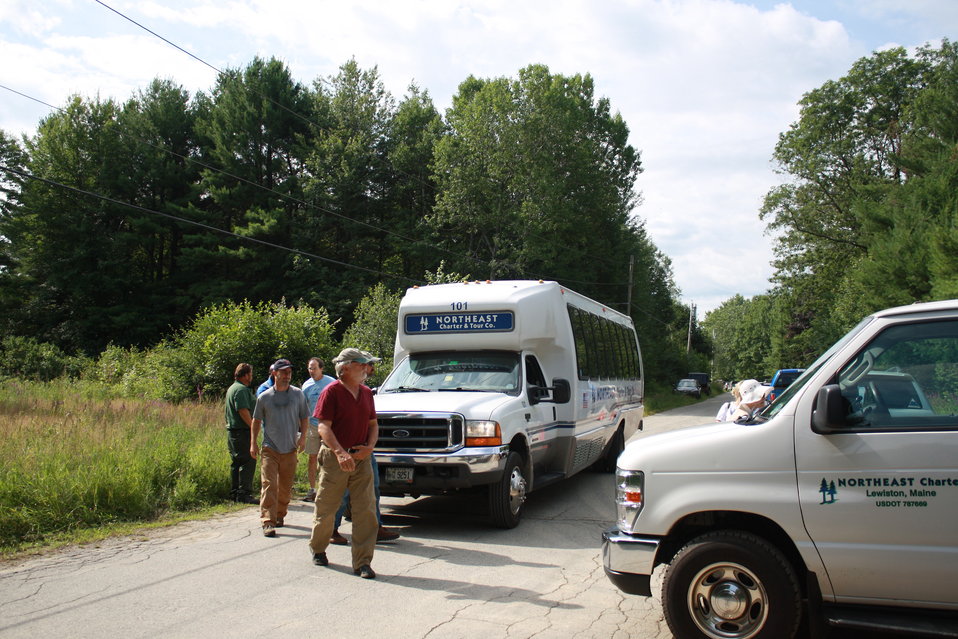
Veazie Dam Removal

Shuttles brought community members and others to the press conference site on the Eddington shore of the Penobscot River.